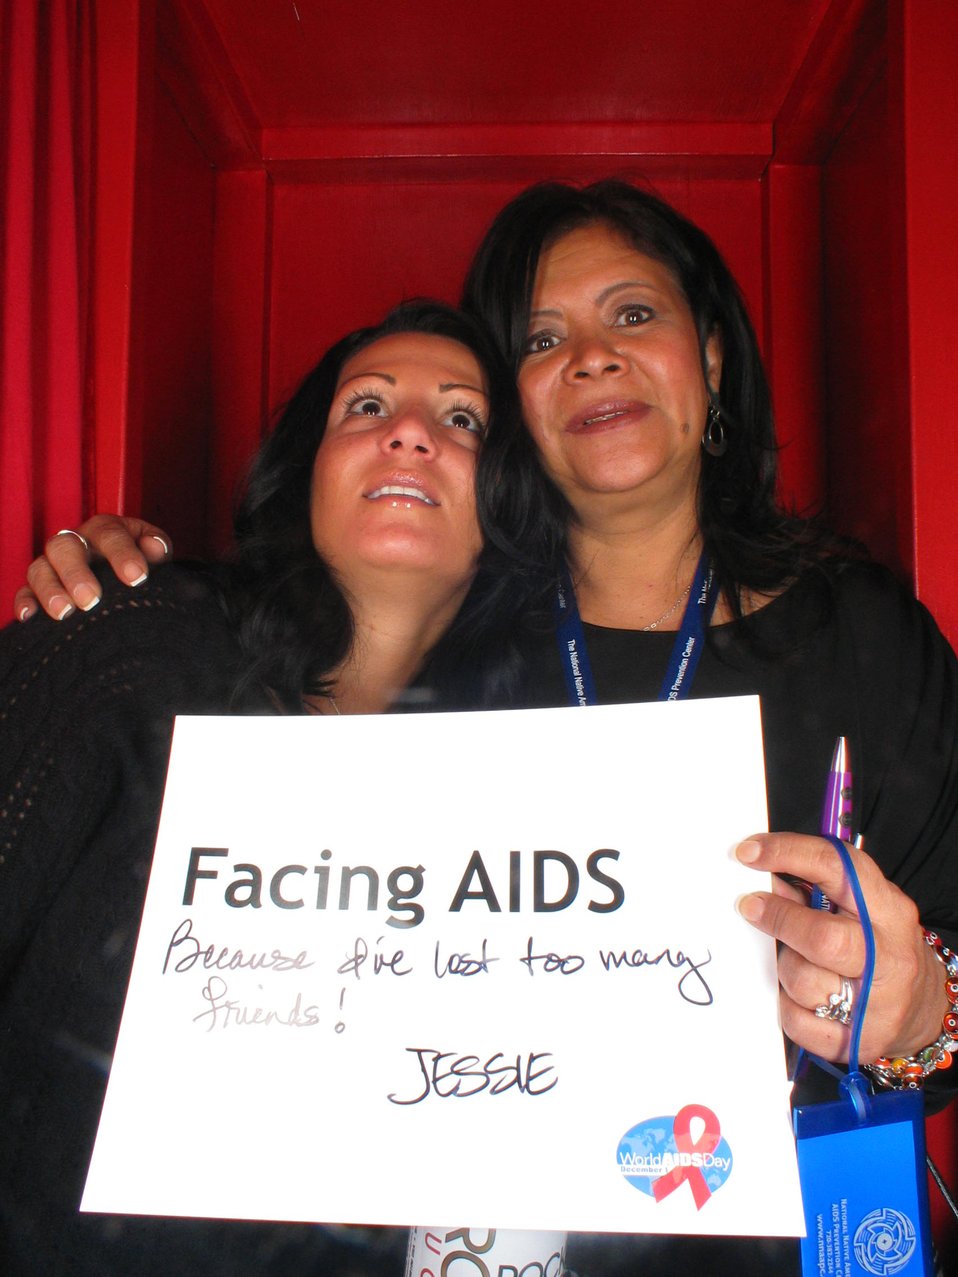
Facing AIDS because we've lost too many friends!